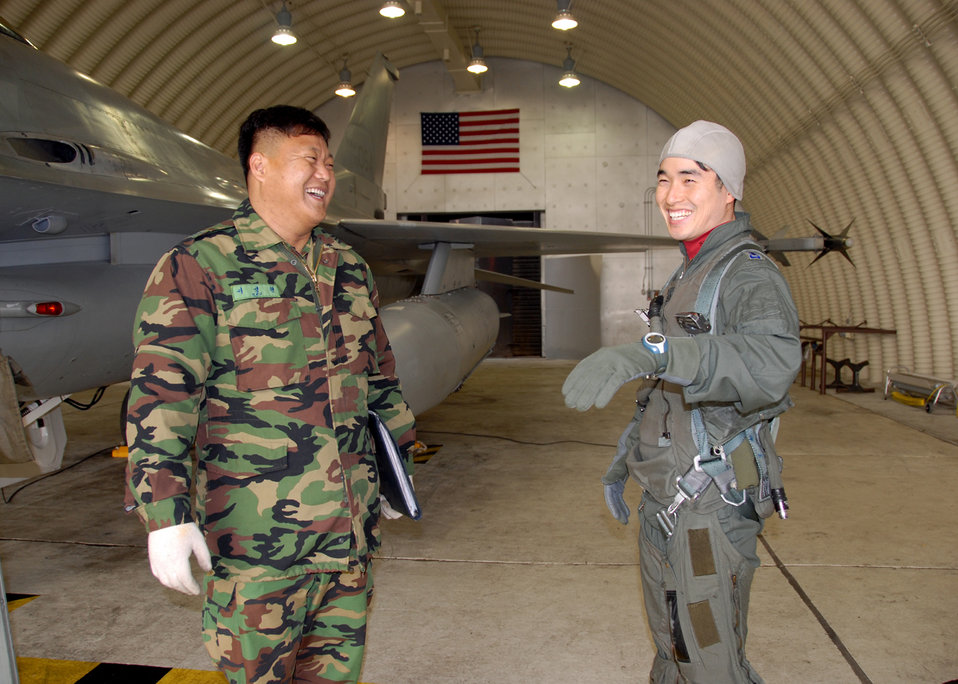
Airmen participate in buddy wing program

Capt. Young-Kwon Ko (right) a KF-16C Fighting Falcon pilot, shares a laugh with his crew chief, Master Sgt. Seong Weon Seo, both assigned to the 157th Tactical Fighter Squadron, Seosan Air Base, Republic of Korea air force, prior to Captain Ko's buddy wing sortie with Air Force pilots assigned to the 36th Fighter squadron Dec. 11 to 13. The purpose of the buddy wing program is to exchange ideas, introduce tactics and improve interoperability between the U.S. and Republic of Korea air forces.